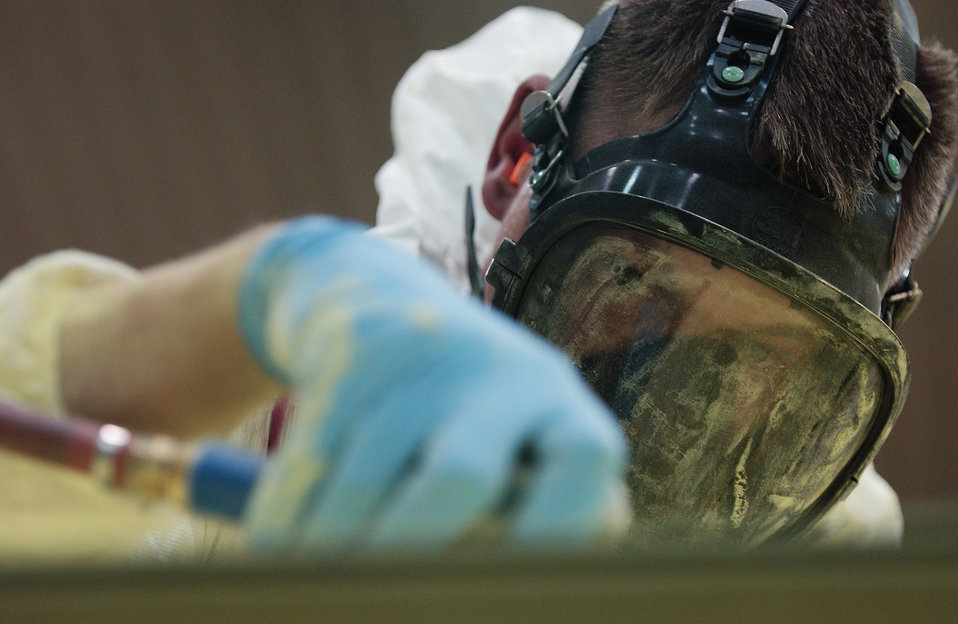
Preserving heritage

II Aug. 20 at Eielson Air Force Base, Alaska, to prepare it for its base coat of paint. Members of the 354th Maintenance Squadron fabrication shop are working on restoring this A-10 to be a static display in the base's Heritage Park. This aircraft will be a permanent reminder of the 355th Fighter Squadron's presence here before its deactivation in 2007.